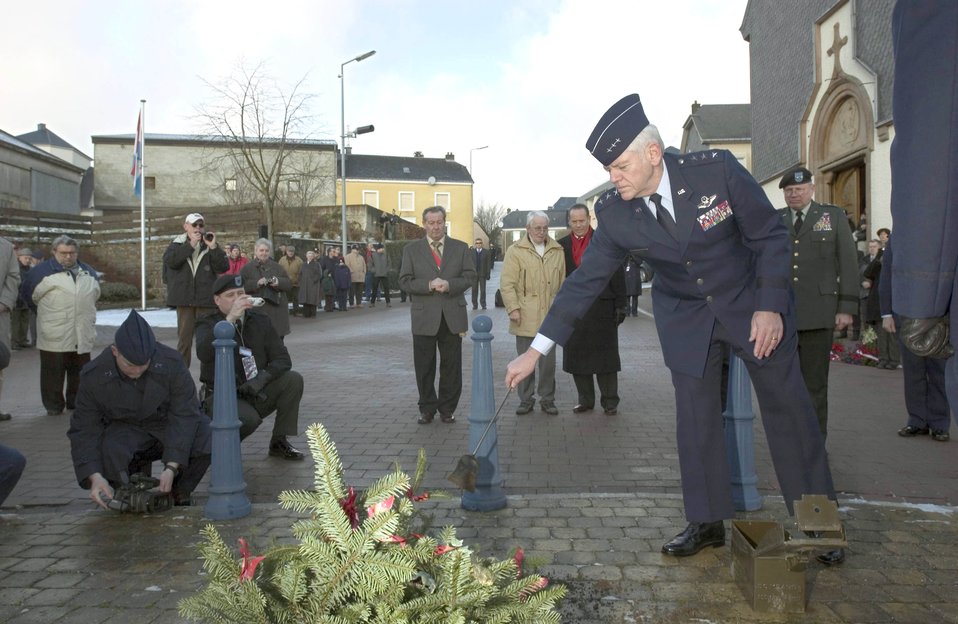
Battle of the Bulge remembered

PERLE, Luxemburg -- Lt. Gen. Arthur J. Lichte spreads soil in front of a memorial for Army Air Force crewmembers who perished in a midair collision of two B-17 Flying Fortresses over the village. , He is the U.S. Air Forces in Europe vice commander,